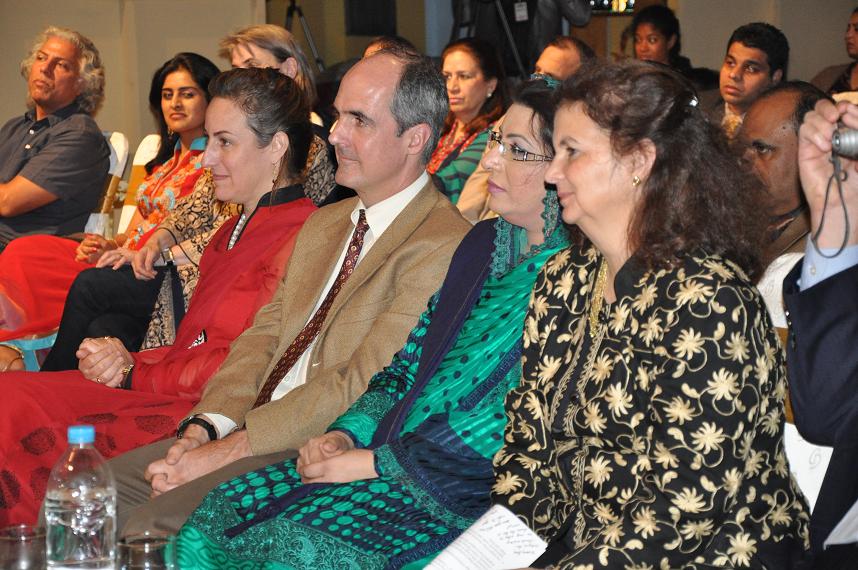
Teg Gehr, Dr. Firdous Ashiq and U.S. CG